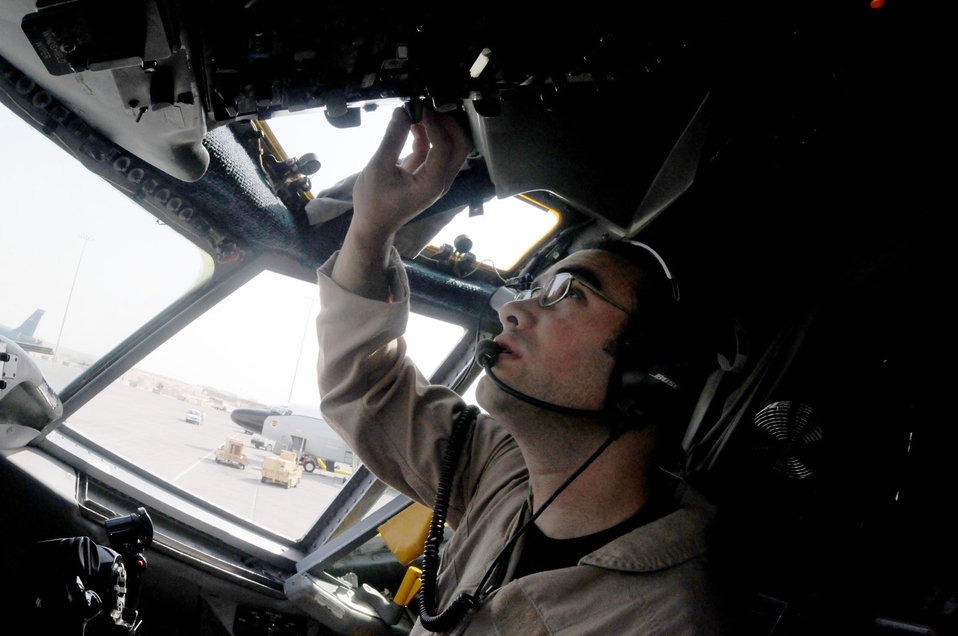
RC-135

The RC-135 Rivet Joint aircraft co-pilot, 1st Lt. Jonathan George, tests equipment in preparation for take off Jan. 30 from a location is Southwest Asia. The lieutenant is a member of the 763rd Expeditionary Reconnaissance Squadron.